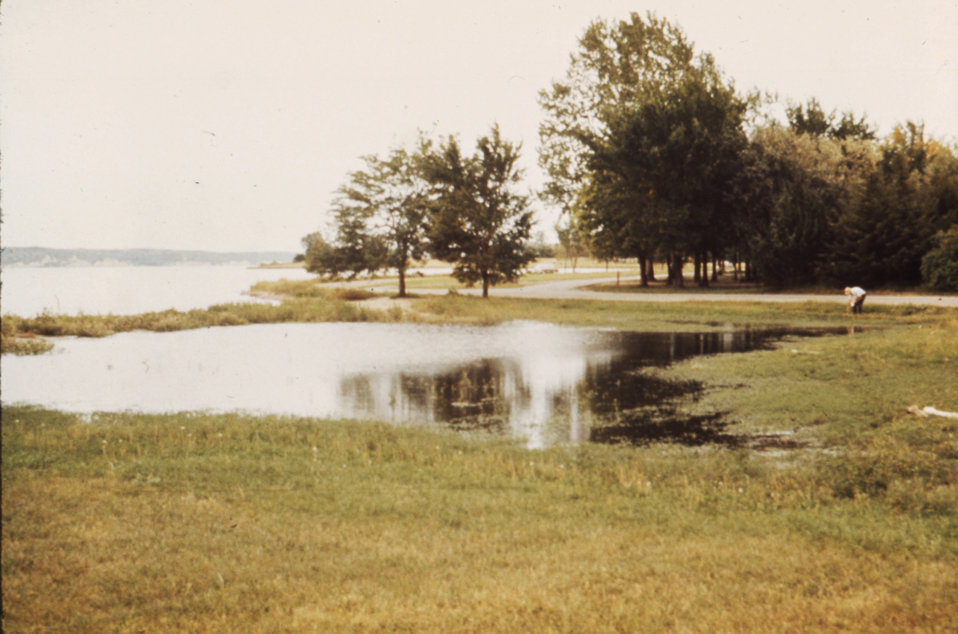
This 1976 photograph shows lake seepage in an area of Lewis and Clark Lake in South Dakota.